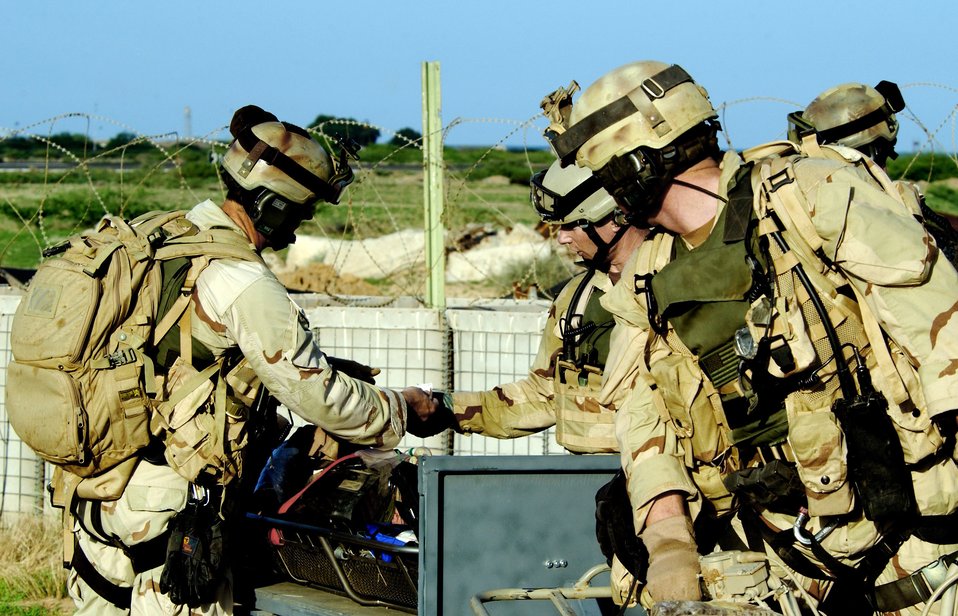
Patient rescue exercise

CAMP LEMONIER, DJIBOUTI, Africa -- Air Force pararescuemen check the straps after placing a patient onto a quad trailer during a simulated patient rescue exercise here, Feb. 12.